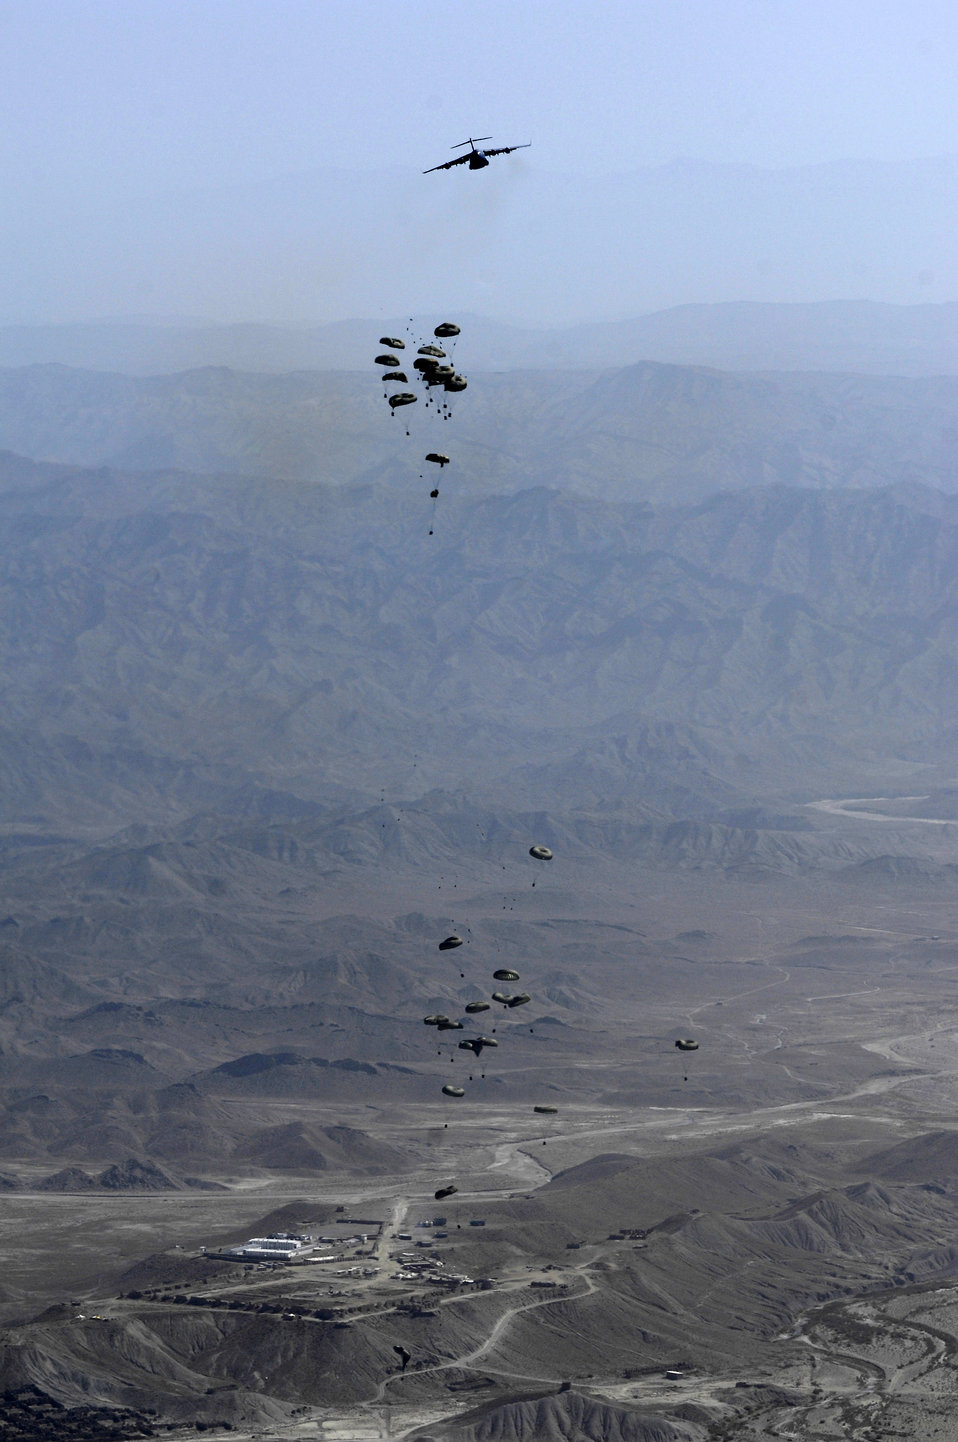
C-17 crews make record airdrop

As 16 bundles from the lead C-17 Globemaster III drift to the ground, a second C-17 drops more bundles to a drop zone Oct. 11 in Afghanistan. A total of 62 cargo bundles were dropped from two C-17s in two passes. This was the first time a combat cargo drop of this magnitude has taken place from two C-17s in formation over one drop zone. The planes and crews are part of the 817th Expeditionary Airlift Squadron at Manas Air Base, Kyrgyzstan.